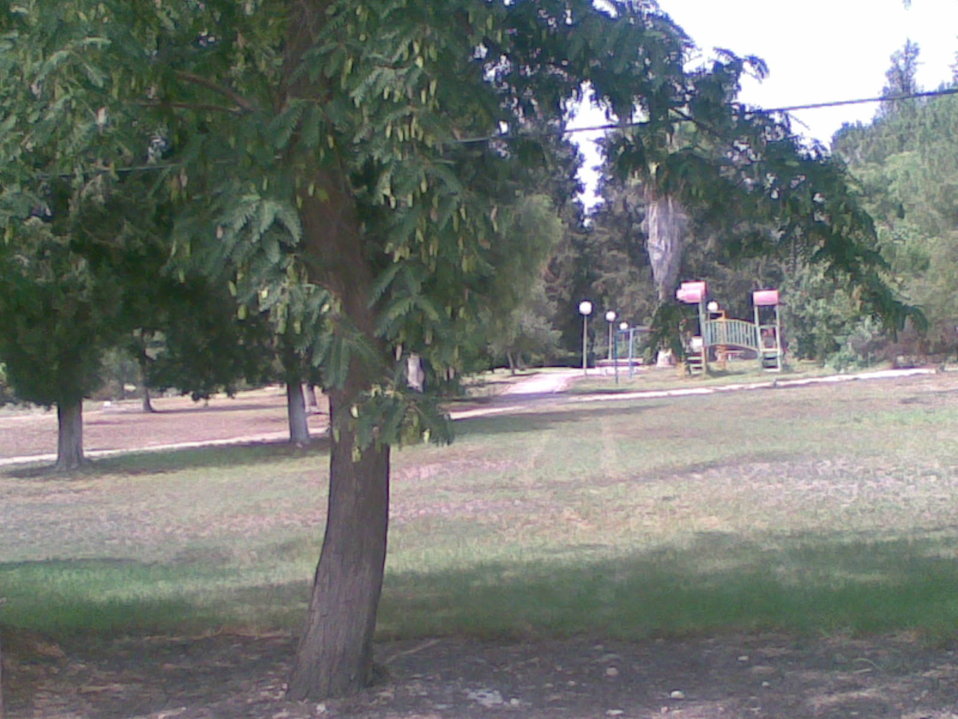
עברית: מרכז המושב; הדשא המרכזי וגן השעשועים